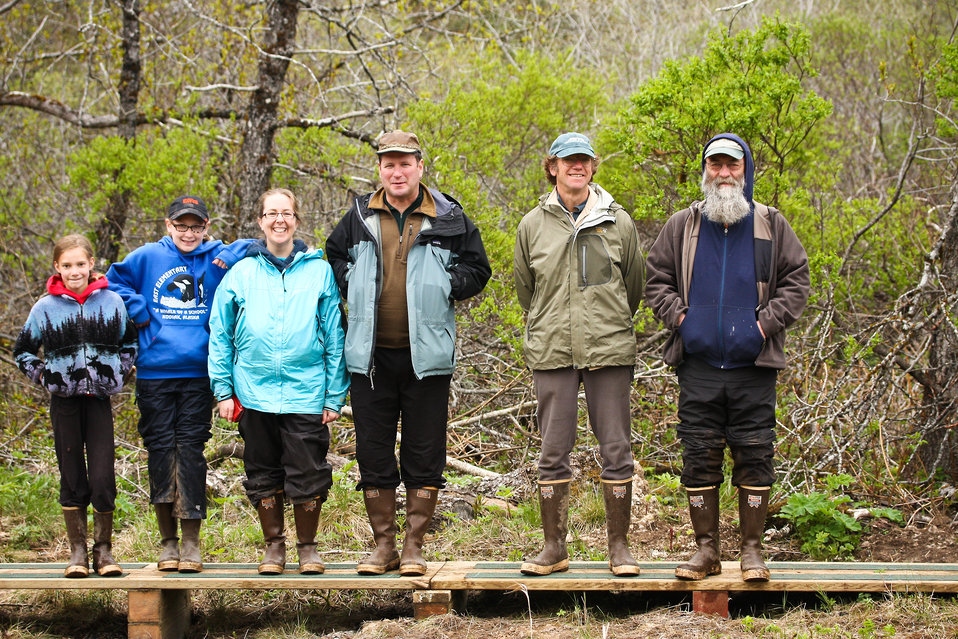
Volunteers and observers checking mistnets during bird banding

Photo Credit: Lisa Hupp/USFWS
Source: Kodiak NWR